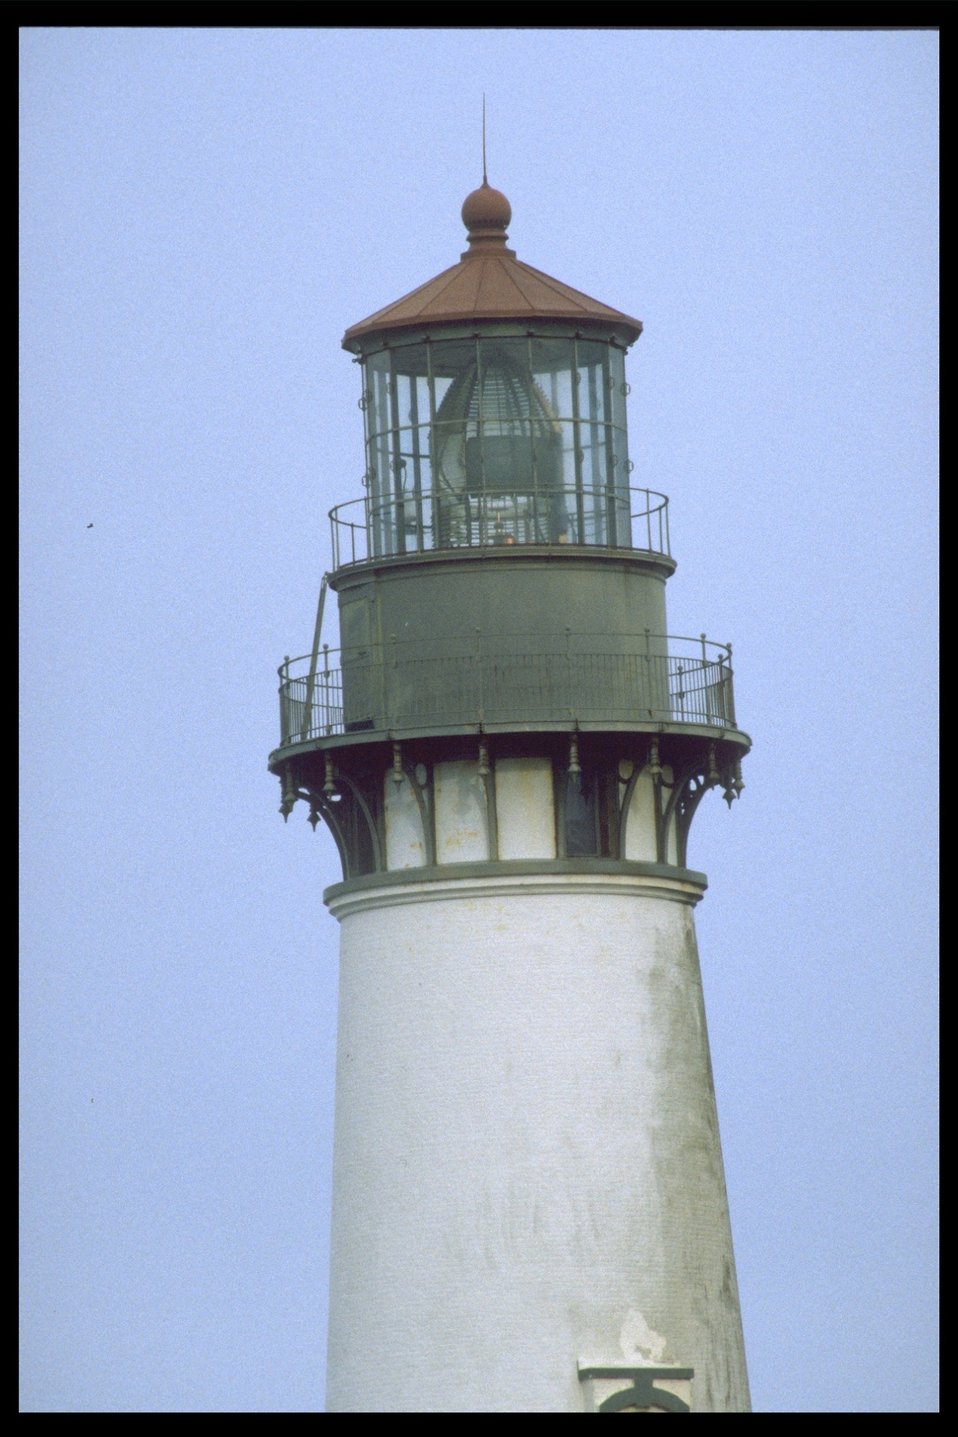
Yaquina Head Lighthouse.